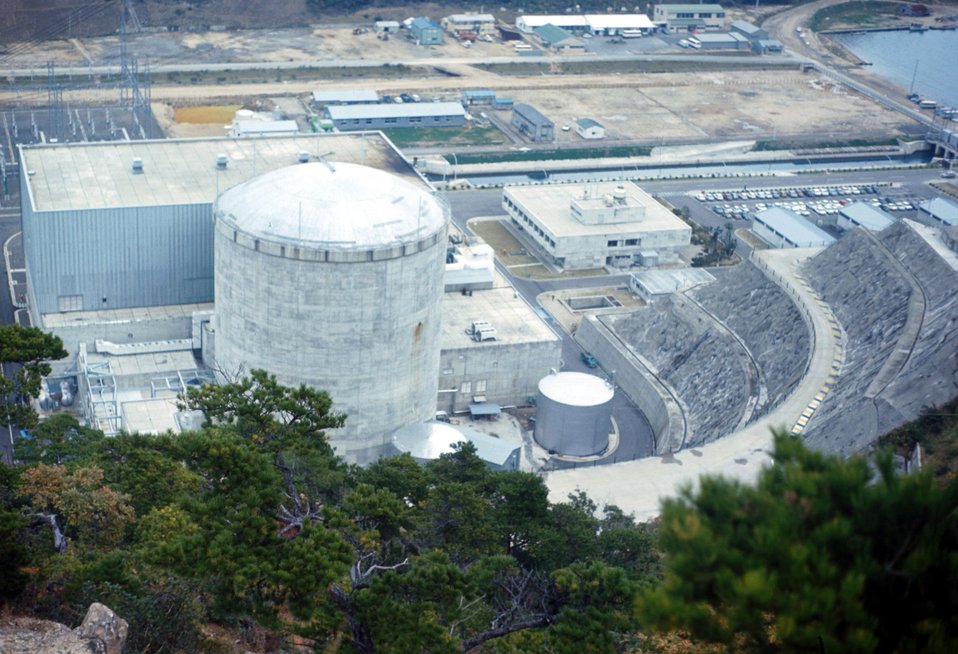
Japan - Tsuruga Plant - Japco Nuclear Reactor. c. 1970